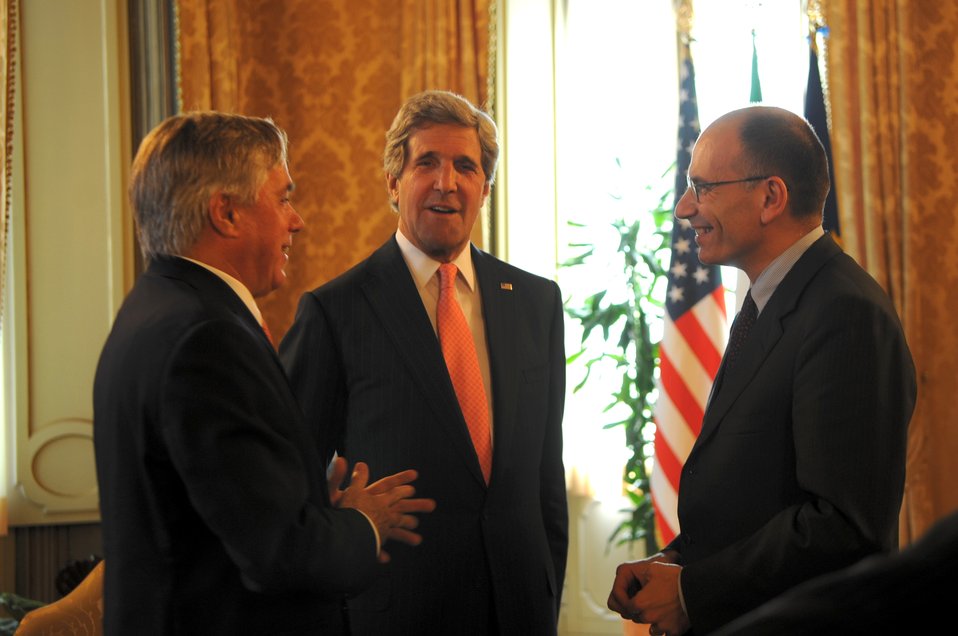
Secretary Kerry Meets With Italian Prime Minister Letta

U.S. Ambassador to Italy David Thorne and U.S. Secretary of State John Kerry speak with Italian Prime Minister Enrico Letta at Palazzo Chigi in Rome, Italy, on May 9, 2013.